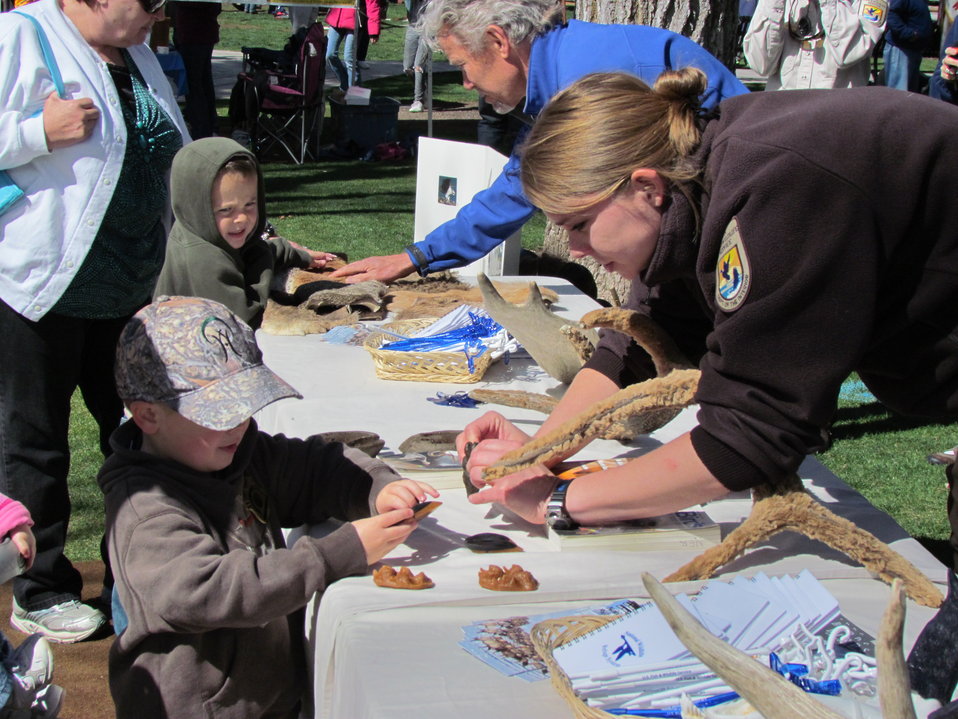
Education Booth on the Town Square

A number of educational booths focusing on wildlife are set up in Jackson's Town Square during the antler auction. Here, National Elk Refuge Visitor Services staff member Natalie Fath gives a youngster some samples to feel.